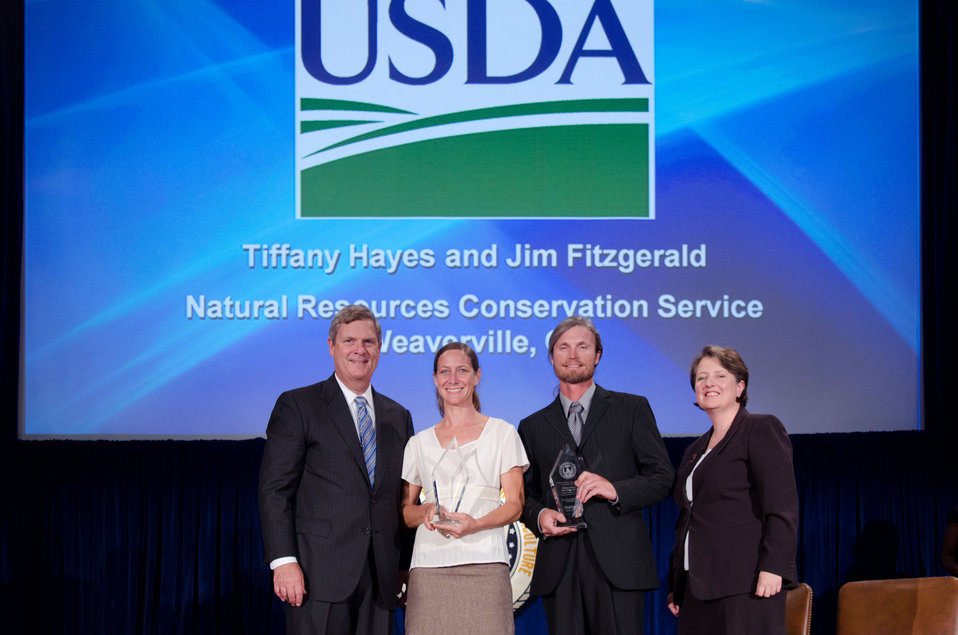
Agriculture Secretary Tom Vilsack (l) and Deputy Secretary Kathleen Merrigan (r), presents the Award for heroism and Emergency response to Tiffany Hayes and Jim Fitzgerald, Natural Resources Conservation Service, Weaverille, Ca. For heroism demonstrated by selfless actions in saving the lives of others in a residential fire. On Wednesday, September 14, 2011 in the Jefferson Auditorium at the US Department of Agriculture in Washington, DC.